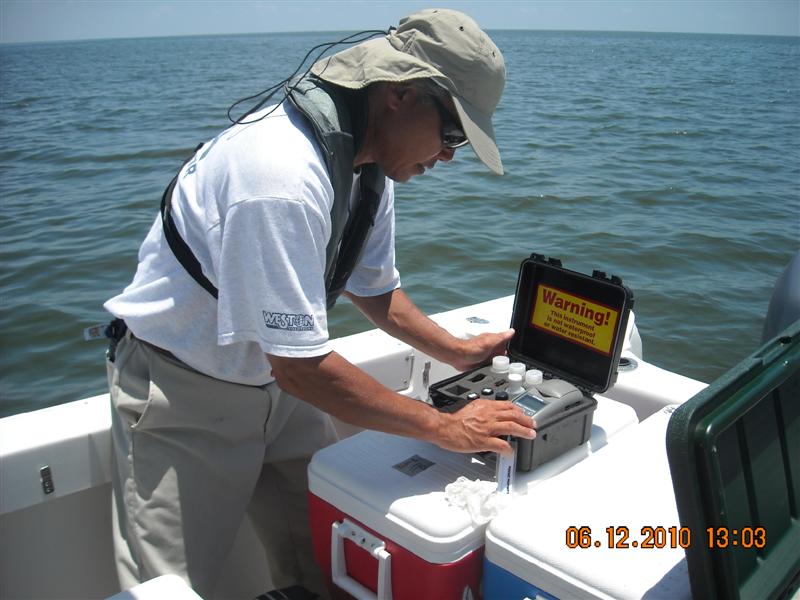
EPA water sampling along the Gulf coast

Water sampling along the Gulf coast